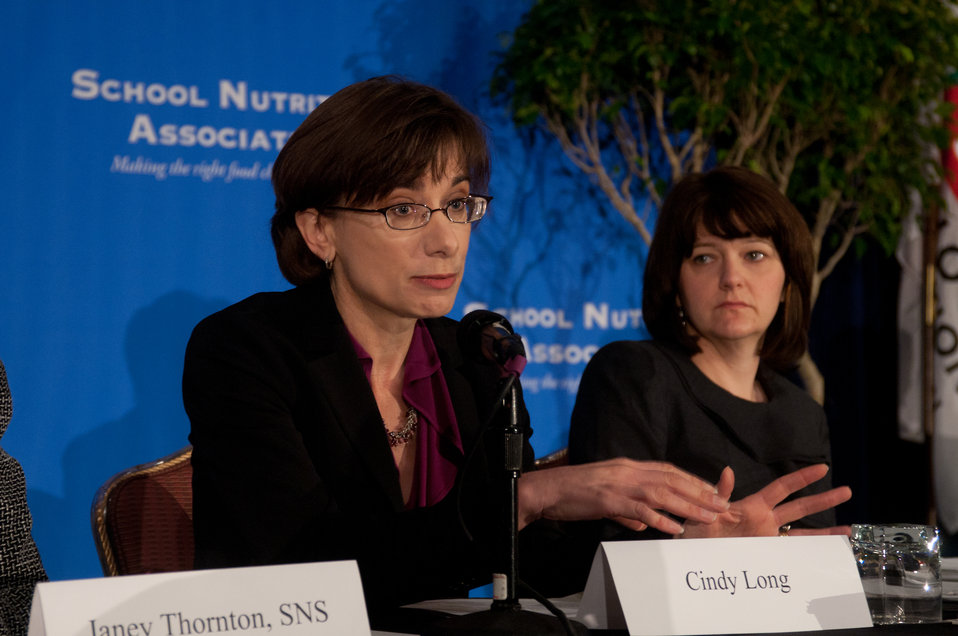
U.S. Department of Agriculture Food and Nutrition Service Child Nutrition Director Cindy Long responded to questions on the Healthy, Hunger-Free Kids Act of 2010 (Public Law 111-296) and the U.S. Department of Agriculture's proposed updated nutrition standards for school meal development, during the School Nutrition Association’s closing general session of their 39th annual Legislative Action Conference at the J.W. Marriott Hotel in Washington, D.C., on Wednesday, March 9, 2011.